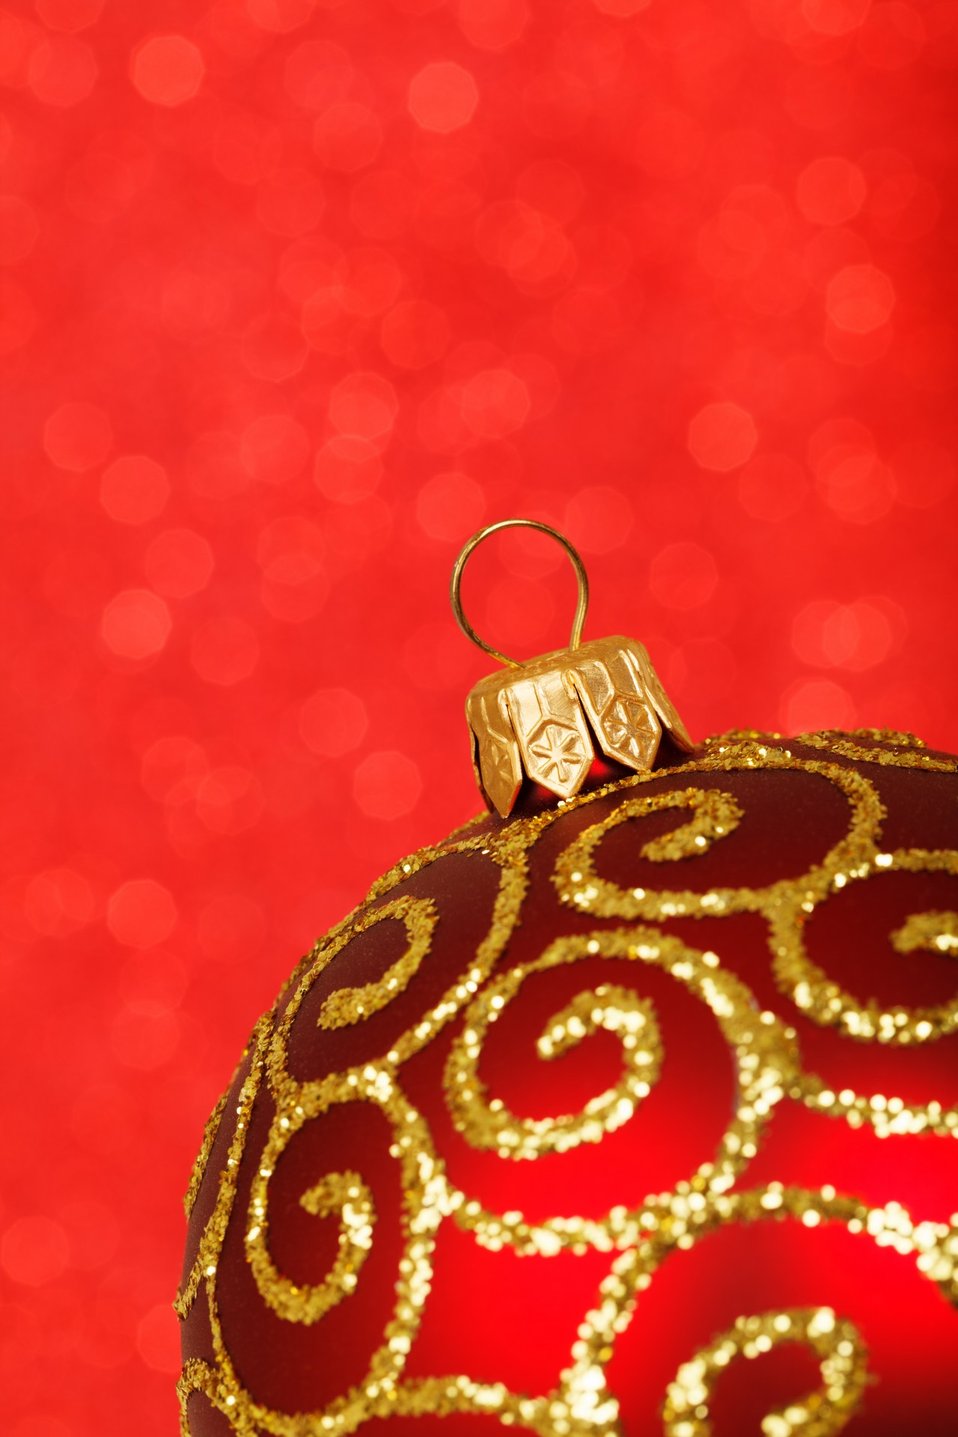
Red golden christmas ball

Red and golden christmas ball ornament on a red background.